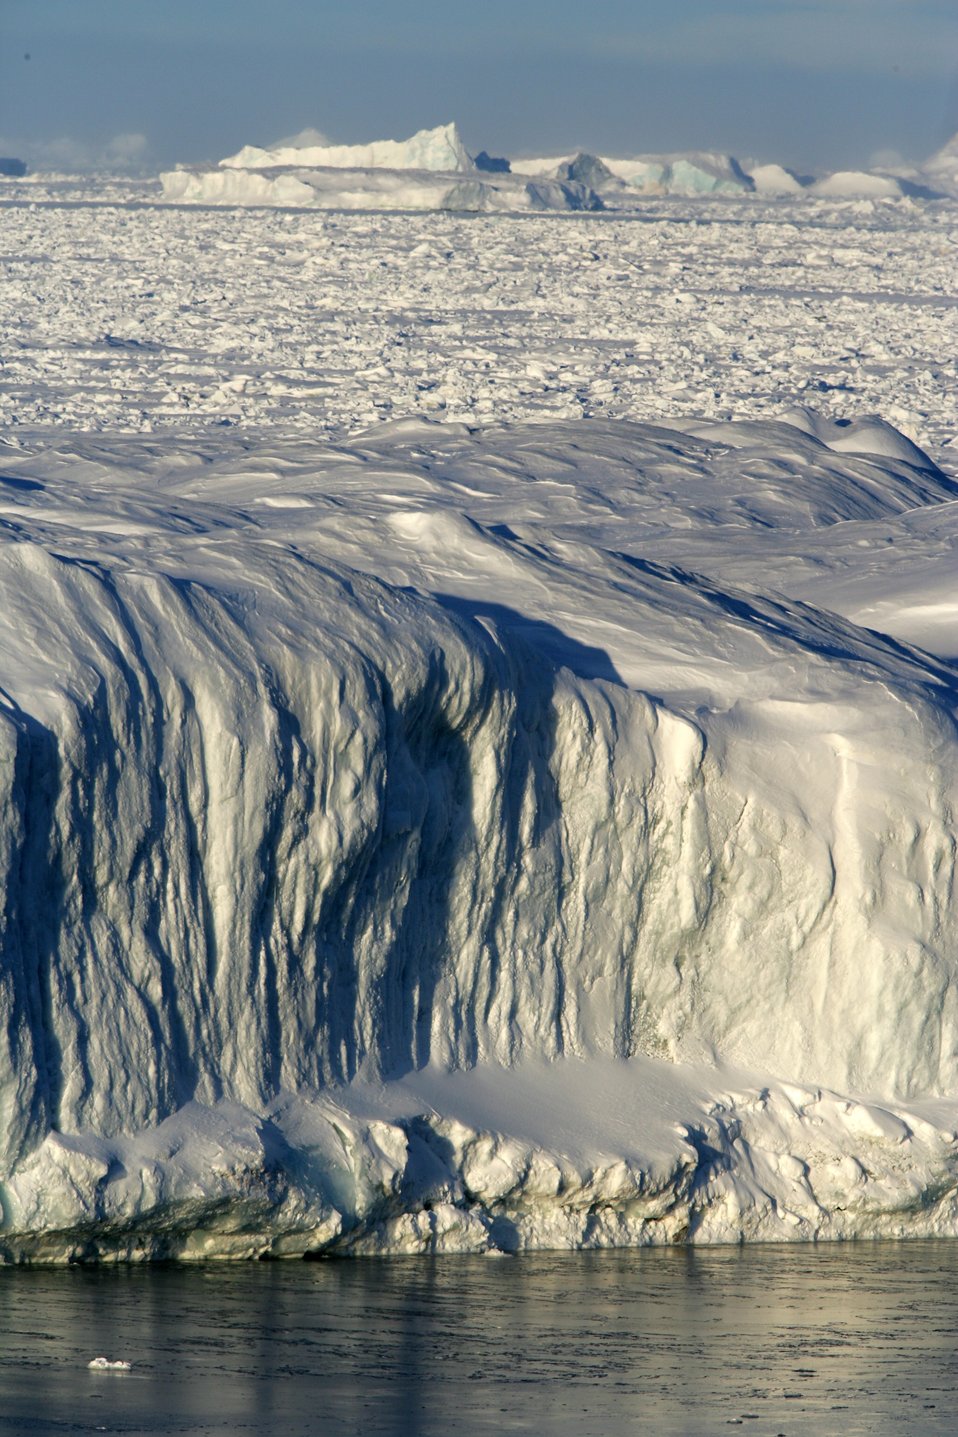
Arctic icebergs.